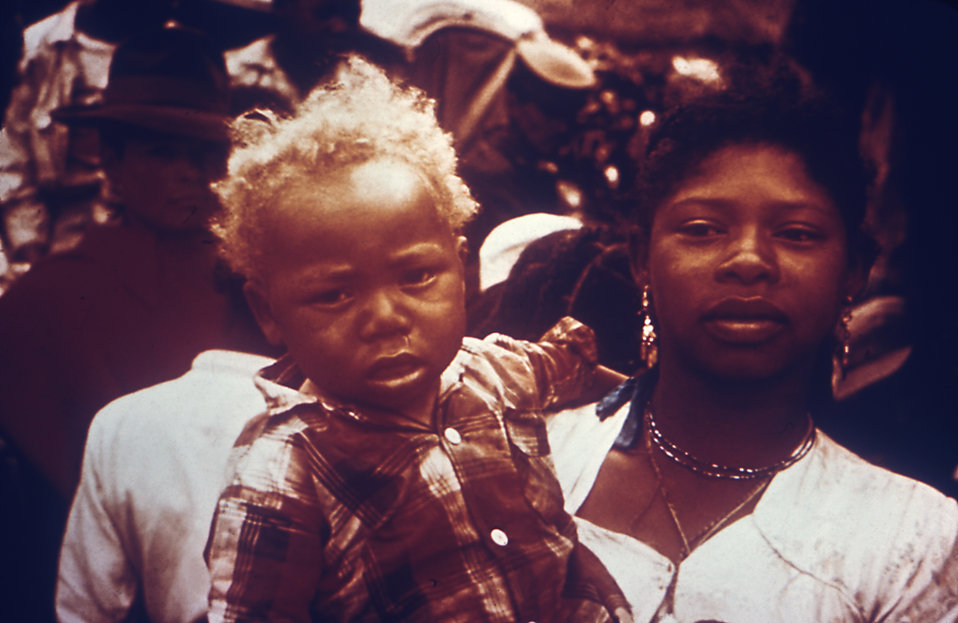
Note the depigmentation of this child's hair who is suffering from kwashiorkor due to malnutrition, 1970.